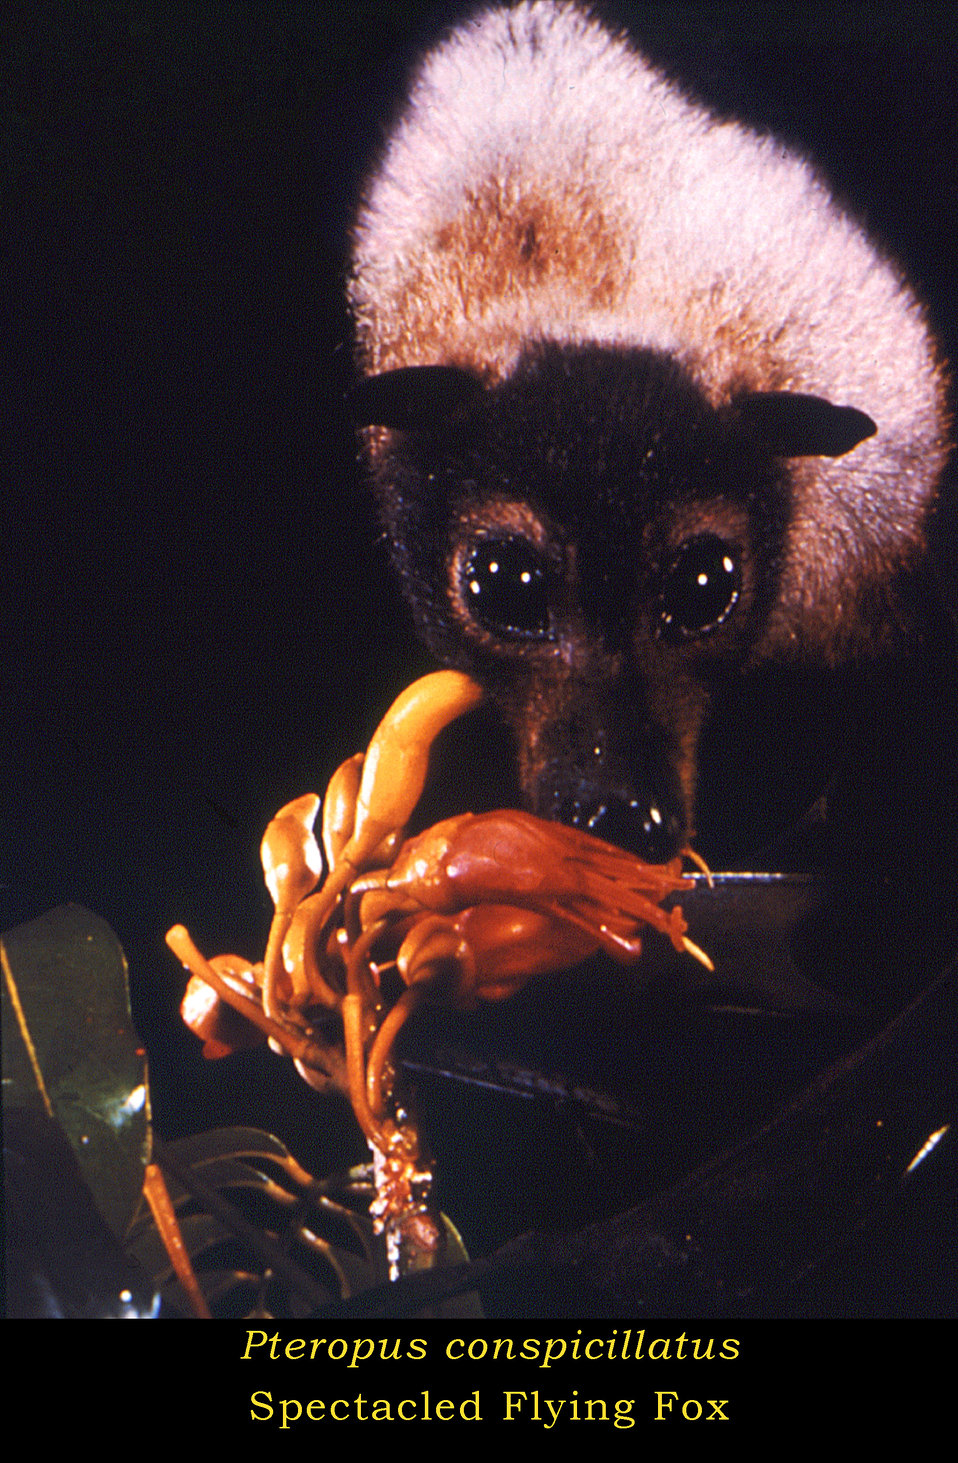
This image depicts a 'Spectacled flying fox', Pteropus conspicullatus, as it was feeding on the nectar of an unidentified grouping of flowers.